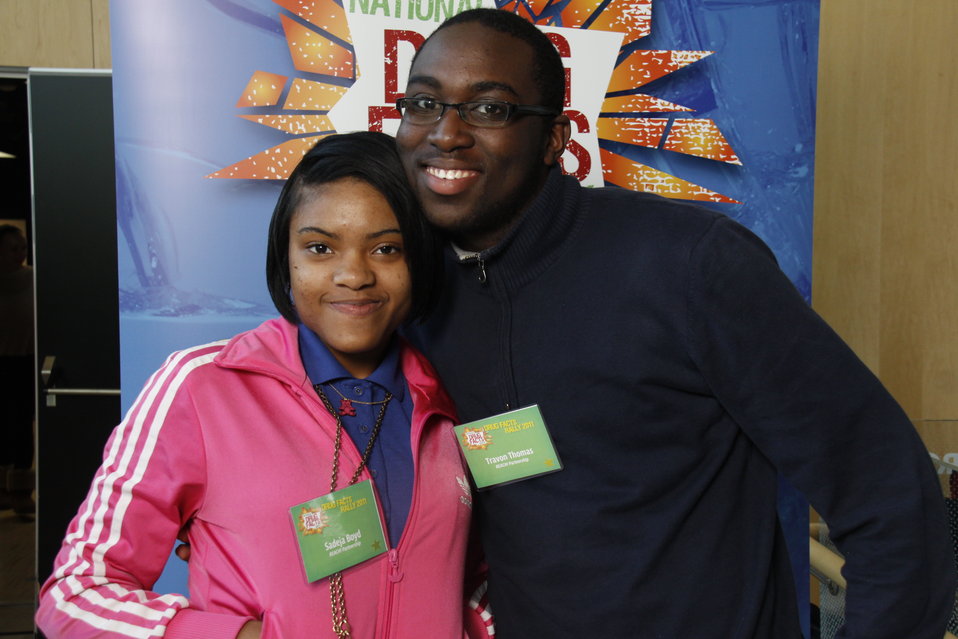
NDFW Mentor Event